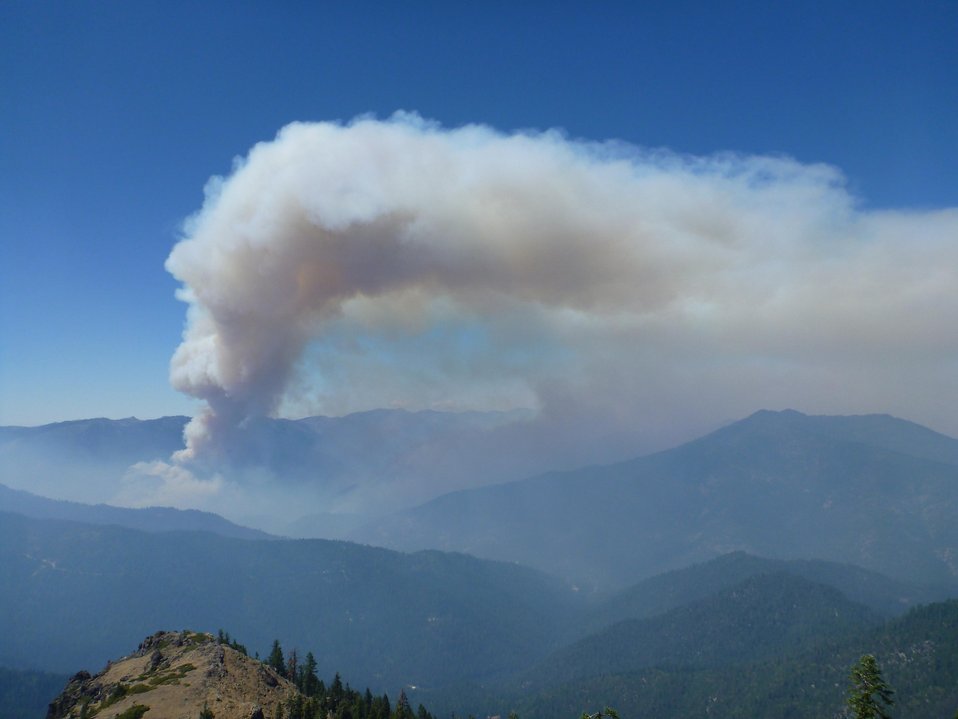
The Salmon River Complex Fire in the Klamath National Forest near Sawyers Bar, CA began on Jul. 31, 2013 was manmade has consumed approximately 9,005 acres and is 16% contained.